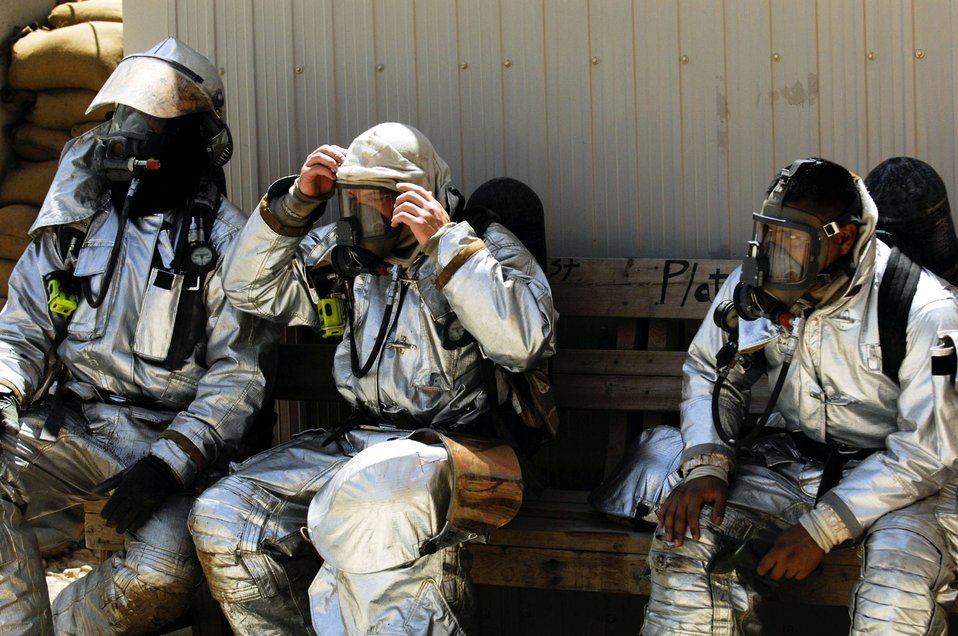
Fire fight in Iraq for the Army

Firefighters rest after attempting an exterior attack on a fire in the Army Motor Pool June 19 on Camp Adder, Iraq. Due to munitions contained in the building and no potential for loss of life, the firefighters switched to defensive operations for the blaze using six trucks to keep it under control and confined to the building. The firefighters are from the 407th Expeditionary Civil Engineer Squadron at Ali Air Base, Iraq.